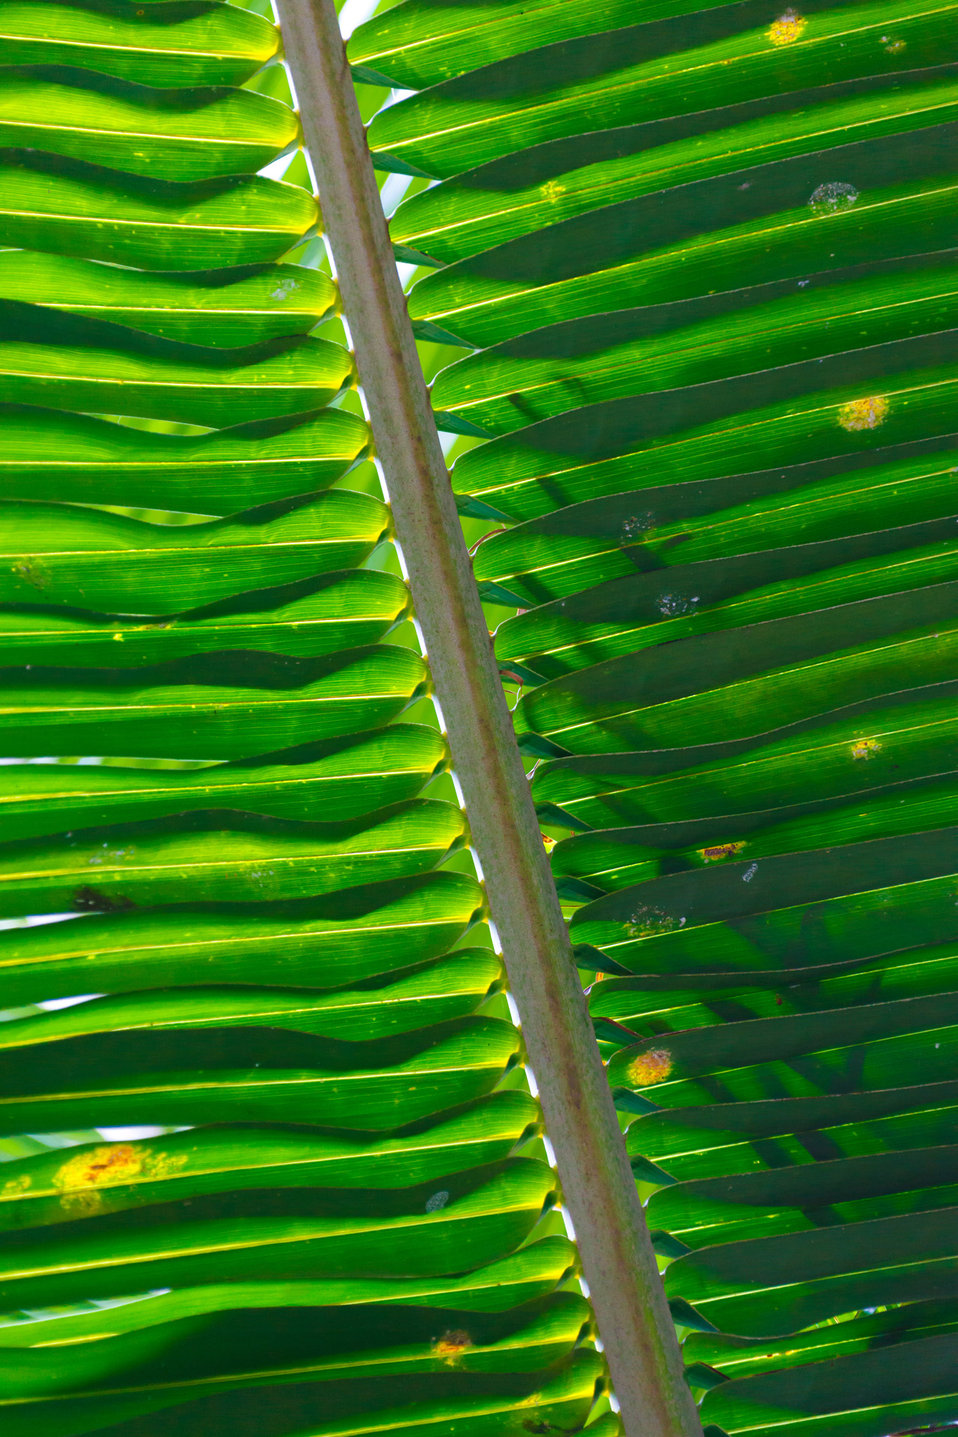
Palm tree leaf pattern

Green palm tree leaf pattern.